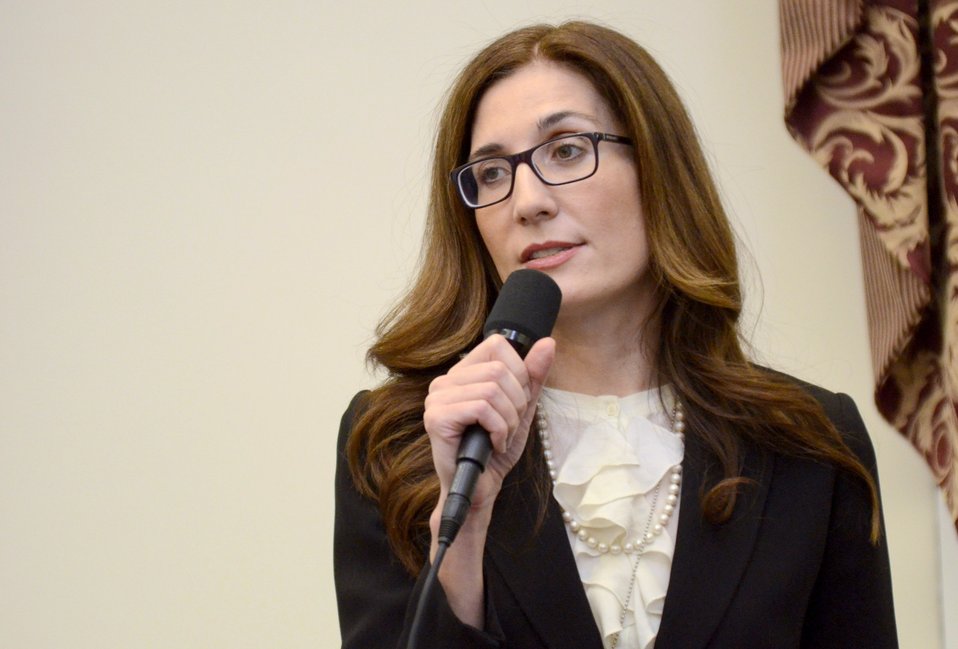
Agriculture Deputy Administrator of the Supplemental Nutrition Assistance Program (SNAP), Food and Nutrition Service (FNS) Lisa Pino along with Agriculture Deputy Secretary Kathleen Merrigan, a Know Your Farmer Compass event that utilized twitter social media to continue the National Conversation on Local and Regional Food projects and how they offer economic opportunities to local farmers, ranchers and food entrepreneurs. The virtual conversation took place from the White House, and Twitter was used to expand the conversation worldwide, from Washington, D.C., on Monday, March 5, 2012. Unlike most events where mobile communication devices are asked to be turned off, here it was asked that they remain on allowing people to have social media conversations.